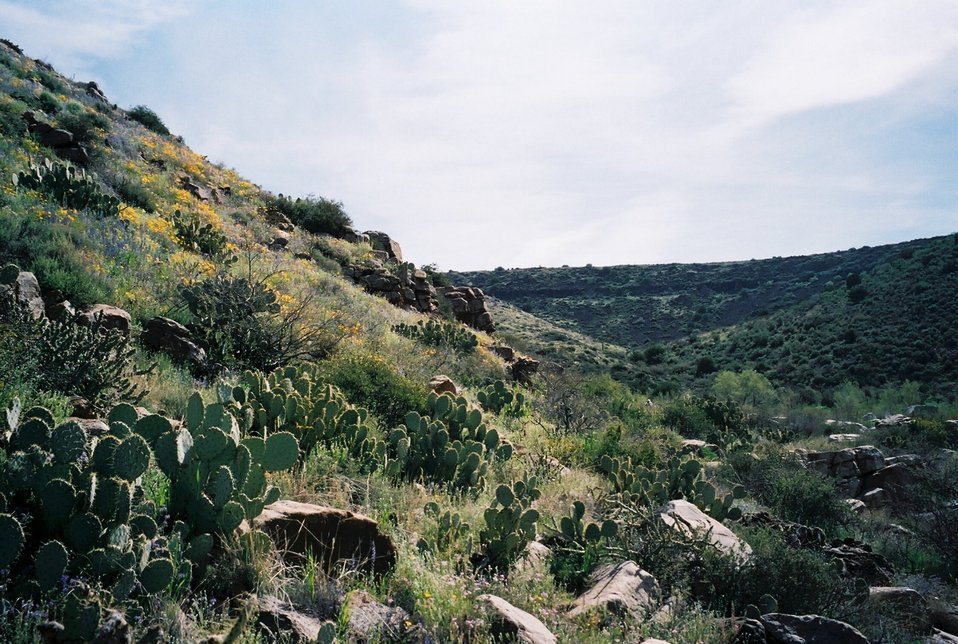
Agua Fria National Monument area.